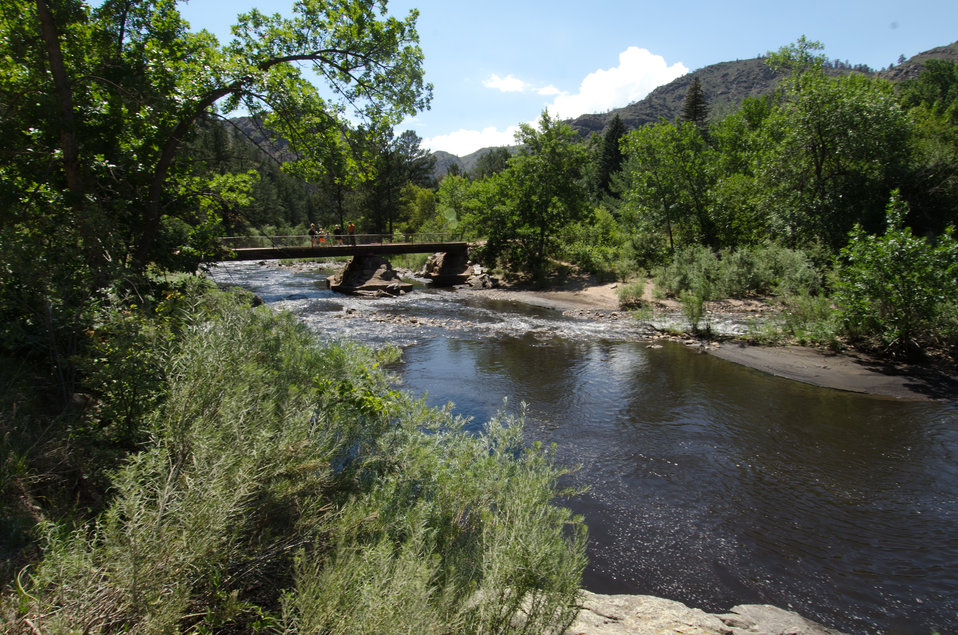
U.S. Department of Agriculture District Conservationist Todd Boldt, orange shirt, talks with three generations of a family, walking across the bridge to see the effects of the Hewlett Gulch Fire, in the Poudre Canyon area, on Friday, July 20, 2012, near Fort Collins, Colorado. “Talking with people is one of the most important things I do. By talking with them, they will talk to maybe 50 others,“ said Todd Boldt. “Explaining the effects of the fire and the steps that the City of Greeley and USDA are doing, go a long way to educate the public.” Unmitigated runoff have turned the water in this river from clear water to nearly black water heavily laden with ash, silt, and burnt debris that recent thunderstorms have already washed down from the mountainsides. When he dug down into the riverbanks, he found ash 18 inches below the surface, at the water’s edge. At its peak more than 400 firefighters were battling fires pushed by 50 mph winds. When the last embers were cooled, more than 12-square miles lay blacked at a cost of approximately 3.2 million dollars to fight. The aerial distribution of straw has successfully kept nearby Seaman Reservoir clean for the drinking water of the City of Greeley. Forest Service lands receive straw, while private and other lands receive a seed mix and straw to promote ground cover plant growth on ash-covered lands. In total, 1,800 tons of straw will be applied during the 14-day operation. One quarter of the cost was paid by the City of Greeley and the U.S. Department of Agriculture funded the remainder.